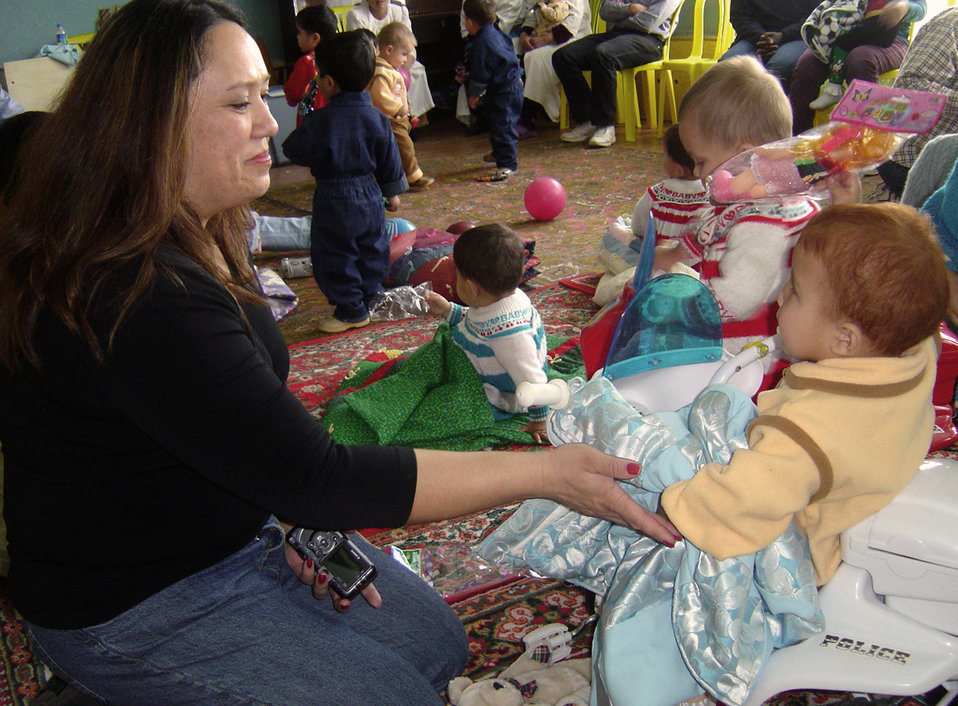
Airmen, Soldiers donate goods to Uzbek baby orphanage

QITAB, Uzbekistan -- Tech. Sgt. Lisa Ramos gives a quilt she made to an Uzbek child during a humanitarian assistance visit to a baby orphanage here. Airmen, Soldiers and civilians from nearby Karshi-Khanabad Air Base visited the orphanage and handed out handmade baby quilts, baby formula, diapers, clothes and toys. Sergeant Ramos is assigned to the 416th Expeditionary Mission Support Squadron's communications flight and is deployed from Vandenberg Air Force Base, Calif.